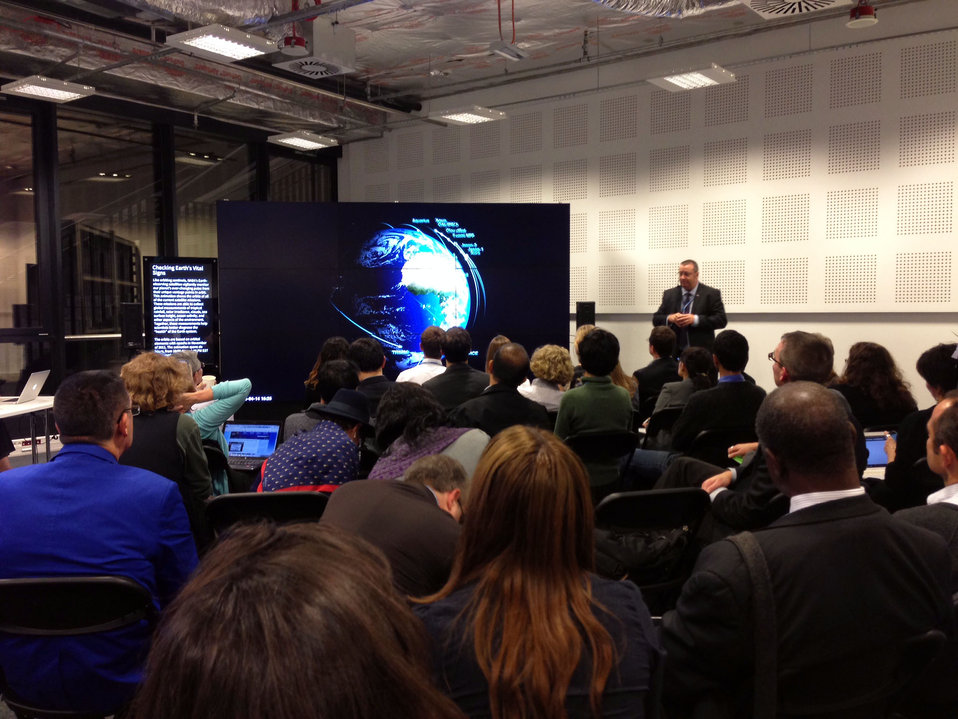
NASA's Doddridge Presents 'Earth Climate from Space'

Bruce Doddridge, scientist at NASA Langley Research Center, presents “Earth Climate from Space” on the NASA Hyperwall at the U.S. Center at the 19th Session of the Conference of the Parties to the UN Framework Convention on Climate Change (COP19) in Warsaw, Poland, on November 20, 2013.